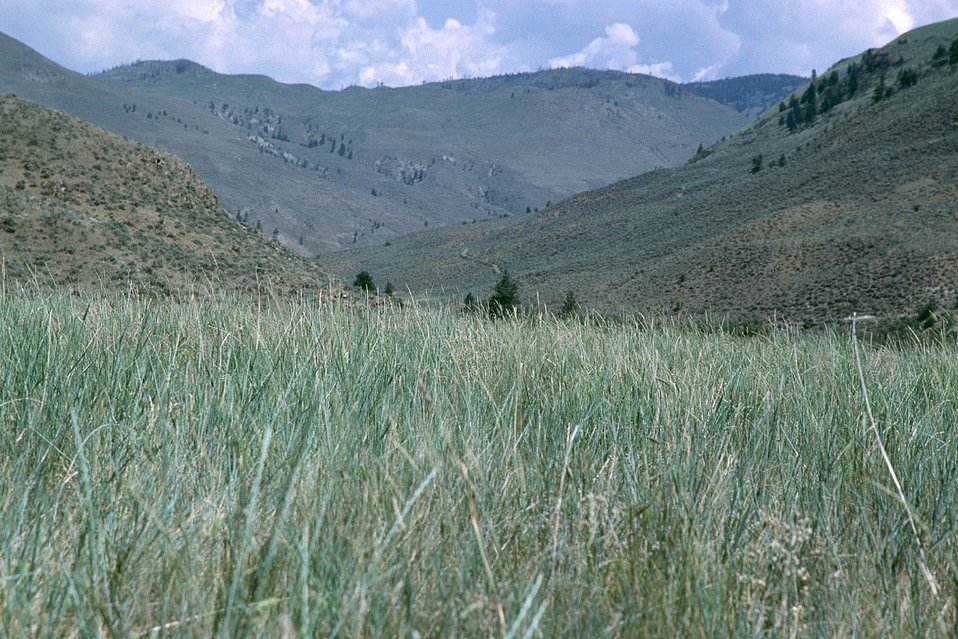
AML Kaaba-Texas Mine Repository, Spokane District, Washington.